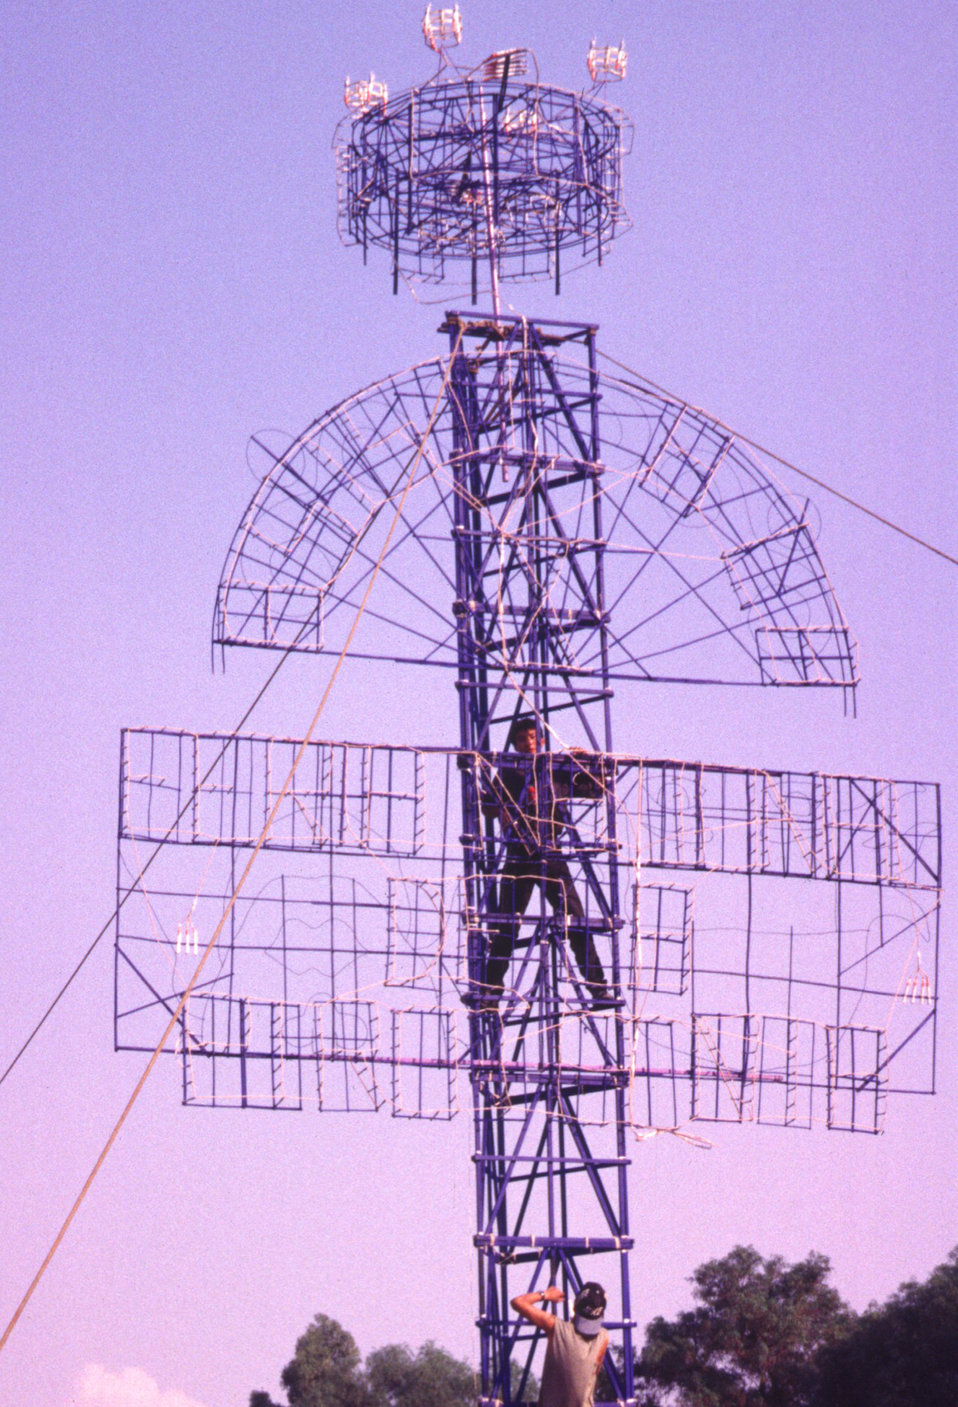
This 1997 photograph shows workers, employed by a family-owned fireworks shop, climbing a tower to assemble a fireworks display for an upcoming fireworks festival in Tultepec, Mexico.